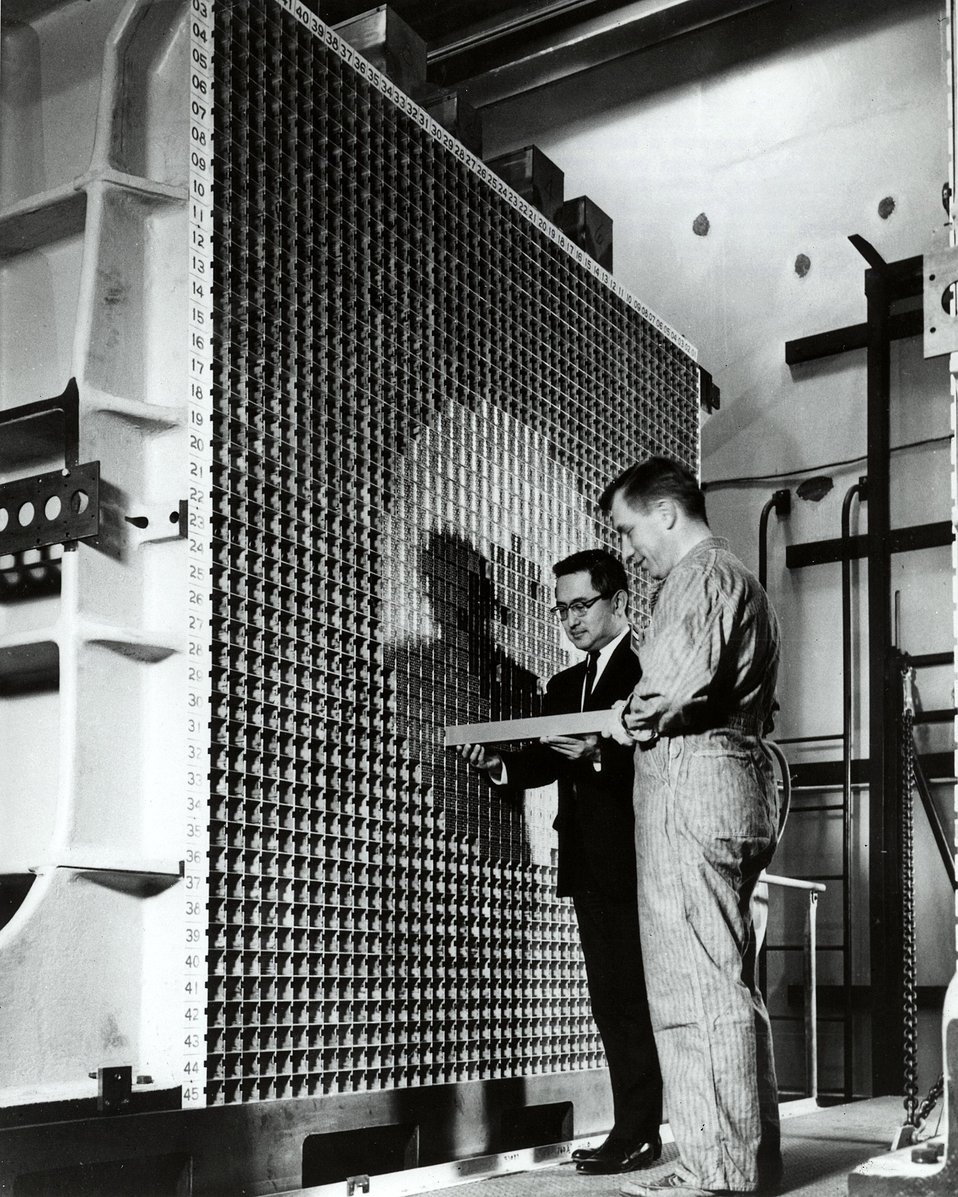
Inspecting a drawer in the lattice of one of the newest Argonne Zero Power Reactors, ZPR IX
c.1965